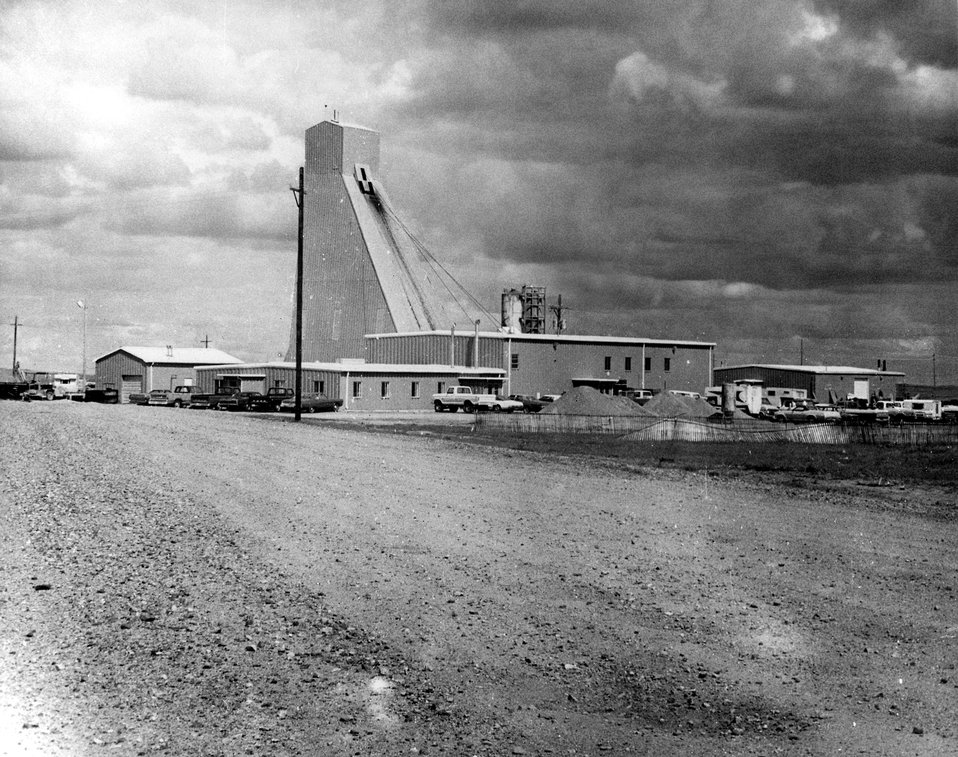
The Buffalo Mine head frame and works at Exxon's Highland Uranium mine 45 miles north-west of Douglas, Wyoming. c. 1976